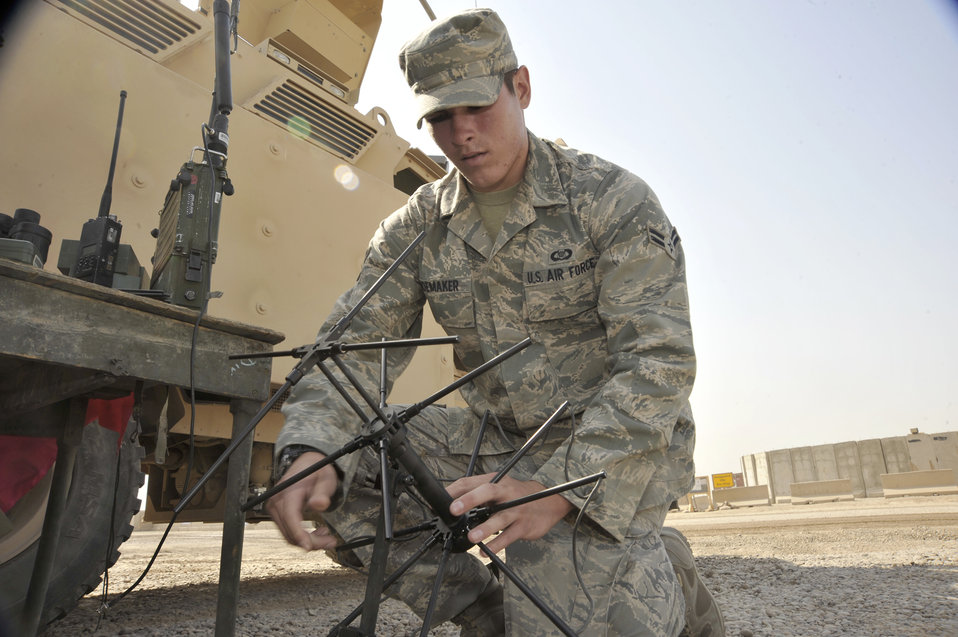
Airmen assist Army ground movements in Iraq

Airman 1st Class John Shoemaker demonstrates a satellite communications antenna Aug. 3, 2010, at Camp Liberty, Iraq. Tactical air control party Airmen are performing pre-combat checks and inspections, in preparation for supporting the Responsible Drawdown of Forces mission, the goal of which is to bring the number of operational forces down to 50,000 servicemembers. Airman Shoemaker is an 82nd Air Support Operations Squadron Det. 2 radio operator, maintainer and driver.